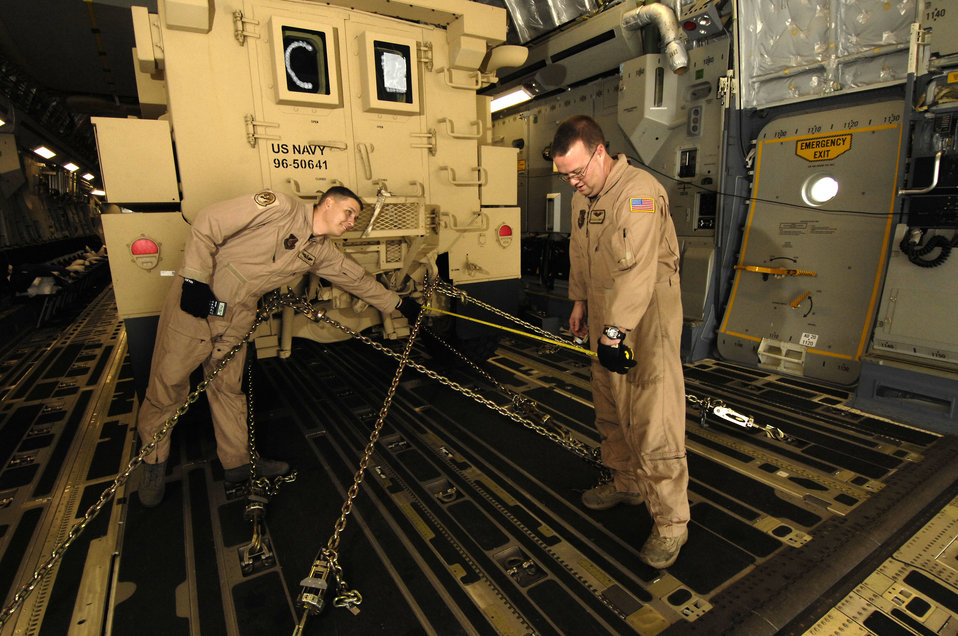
C-17 Reaches Across the Globe

Loadmasters Tech Sgt. Kenneth Bragg (left) and Staff Sgt. Lucas P. Crumpton assess the strength of the tie down chains that are keeping an Mine Resistant Ambush Protected vehicle aboard a C-17 Globemaster III while at Kadena Air Base, Japan, Dec. 29, 2008. Each chain is suppose to be able to support 25,000 pounds, but due to the configuration, the ratio is limited; therefore they must make sure actual ratio is the effective ratio required to support the vehicle.